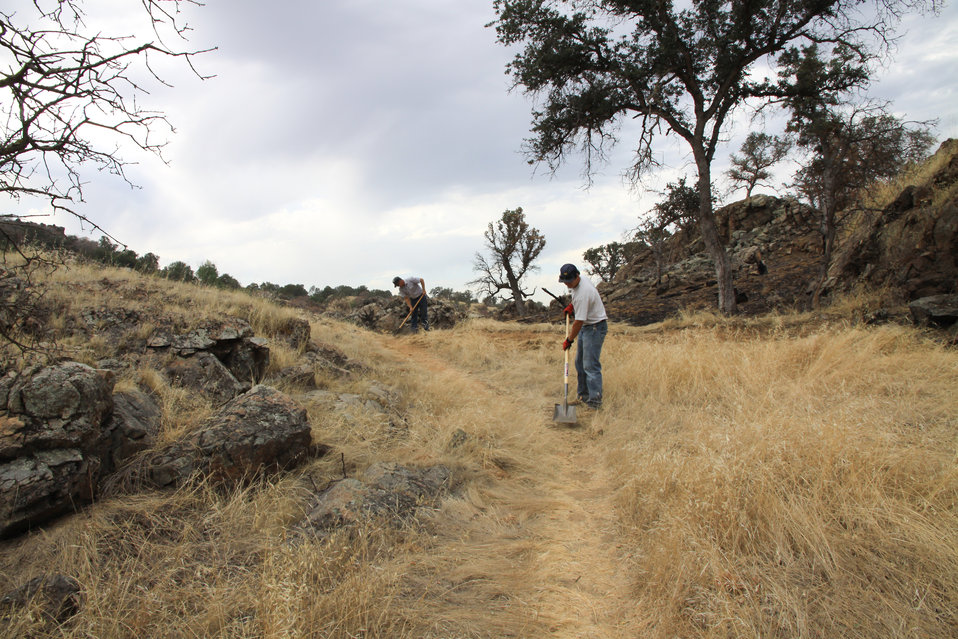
National Public Lands Day at Stanislaus River Parks

Staff members at Stanislaus River Parks near Oakdale, Calif., restore trails in celebration of National Public Lands Day Sept. 24. Stanislaus was one of seven U.S. Army Corps of Engineers Sacramento District recreation parks that participated in the event.